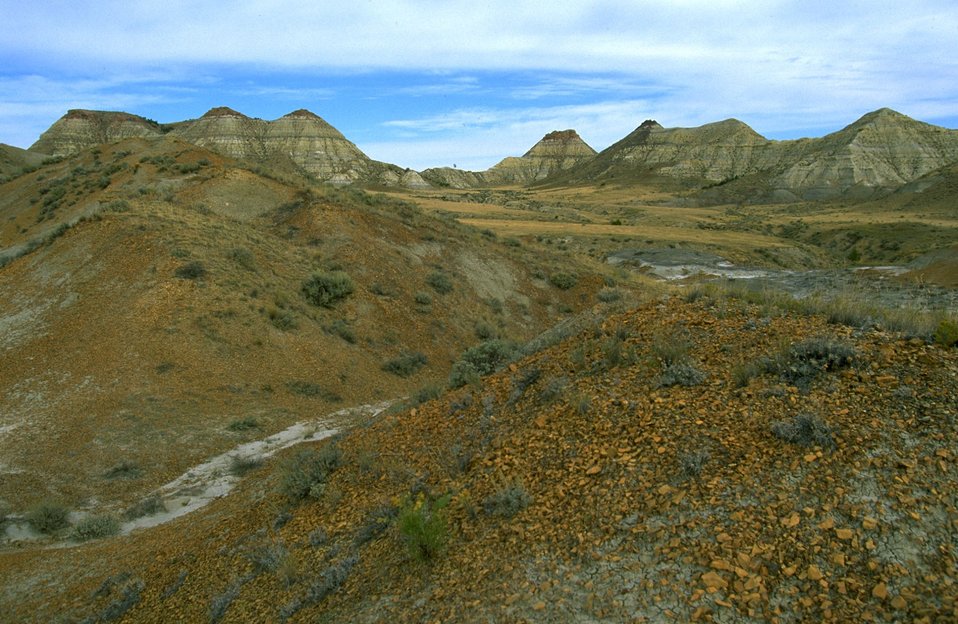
Terry Badlands Wilderness Study Area